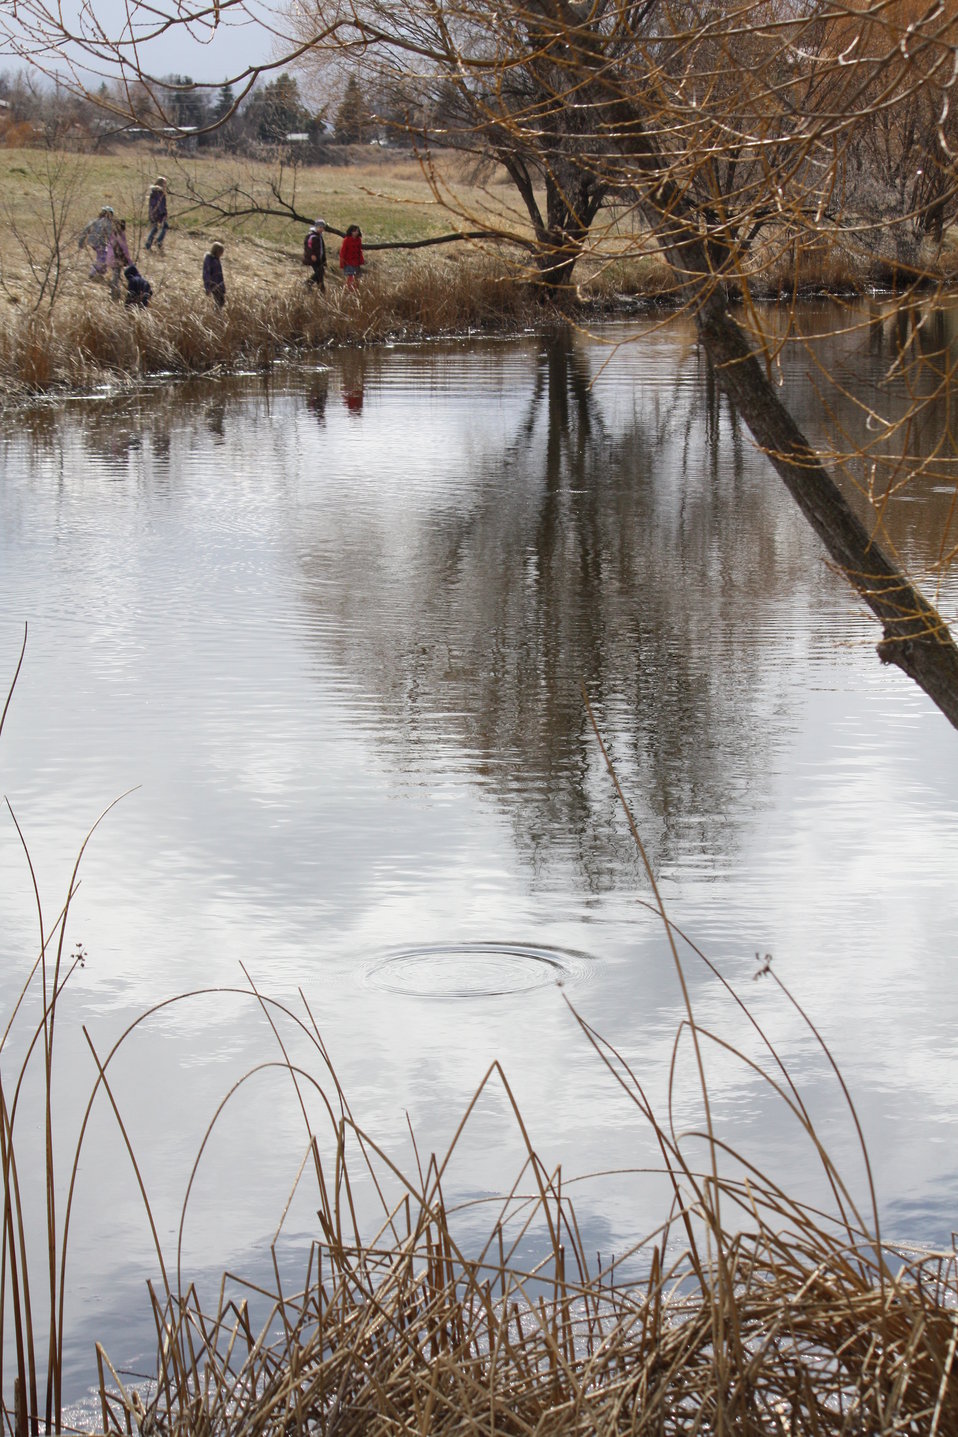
DryBridge Stocking

School children, teachers, parents, along with Creston National Fish Hatchery personnel help with stocking fish at DryBridge Pond in Kalispell, Montana.